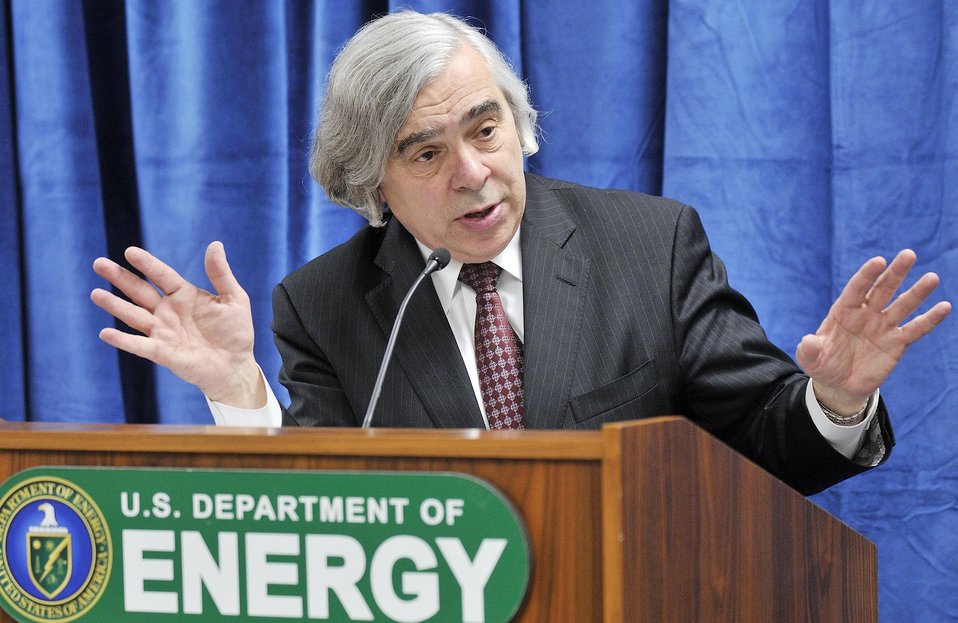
175

SECRETARY E. MONIZ - 2014 DOE BUDGET ROLL OUT ON MARCH 4, 2014